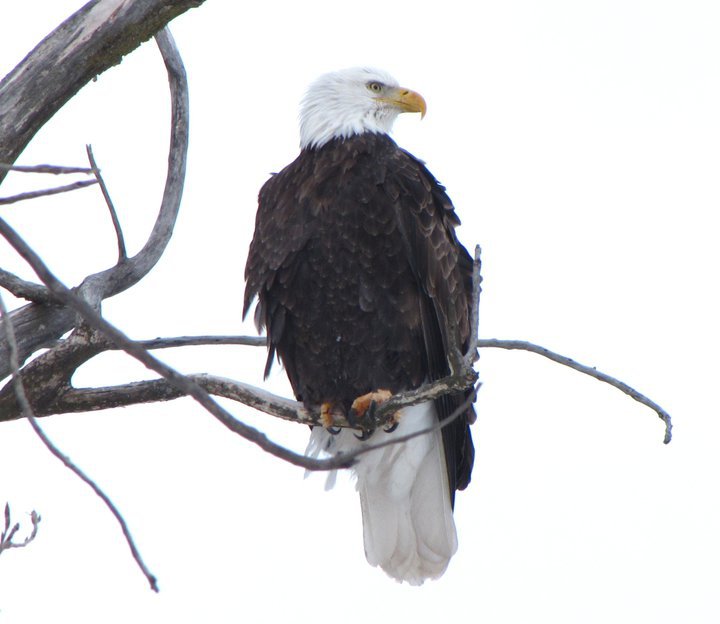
bald eagle

Port Louisa National Wildlife Refuge